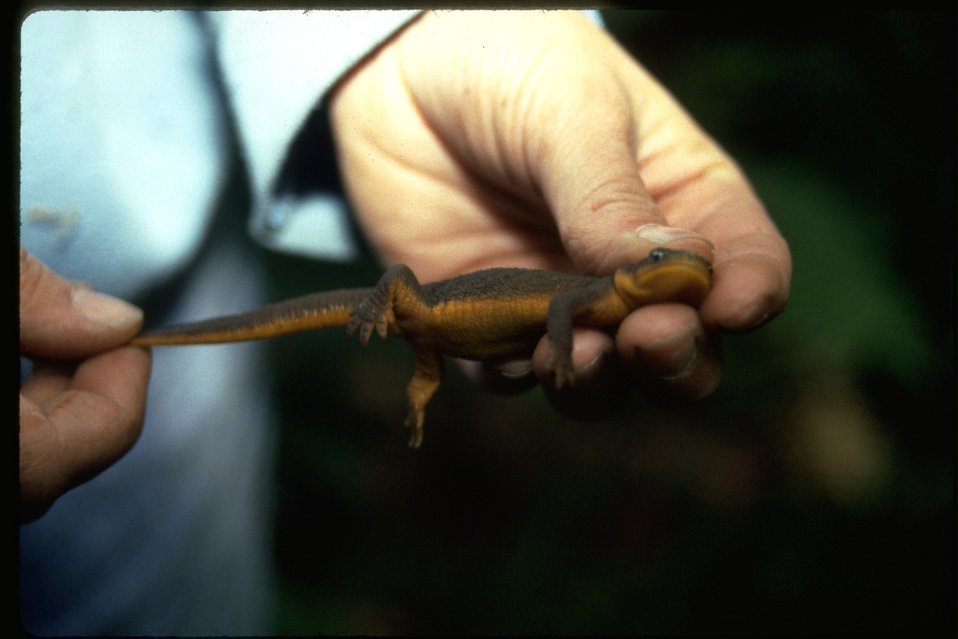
Close up of a rough-skinned newt.